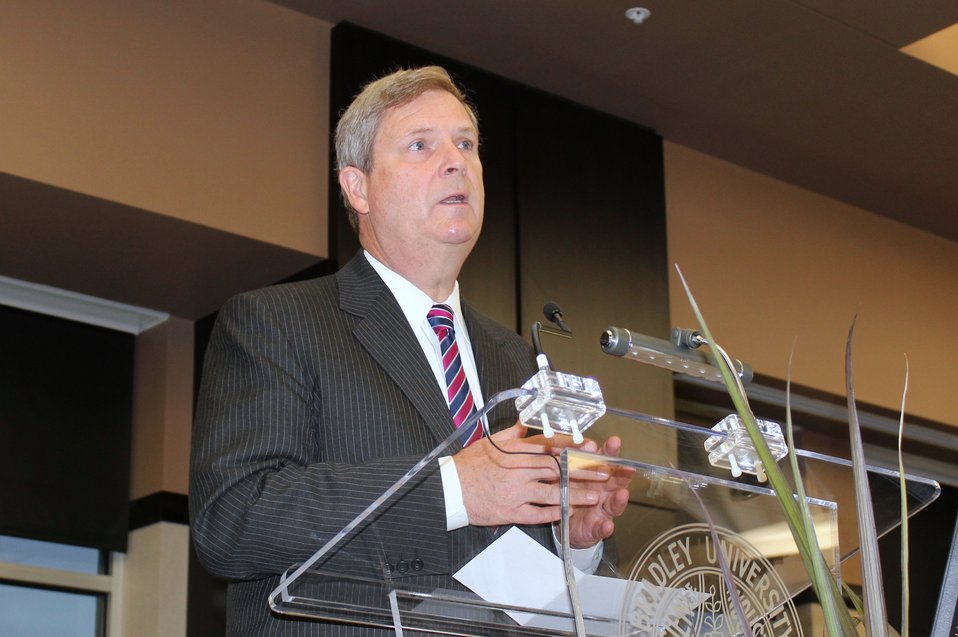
Agriculture Secretary Tom Vilsack keynote speaker at the “Future of Midwest Agriculture and Environmental Sustainability symposium at Bradley University in Peoria, IL, on Thursday, Nov. 3, 2011.